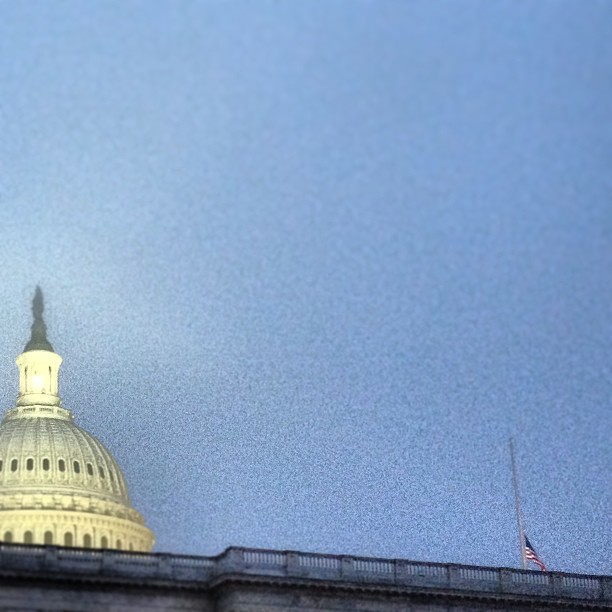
Capitol Dome on foggy evening in #dc, flag flies at half-staff over the Senate.